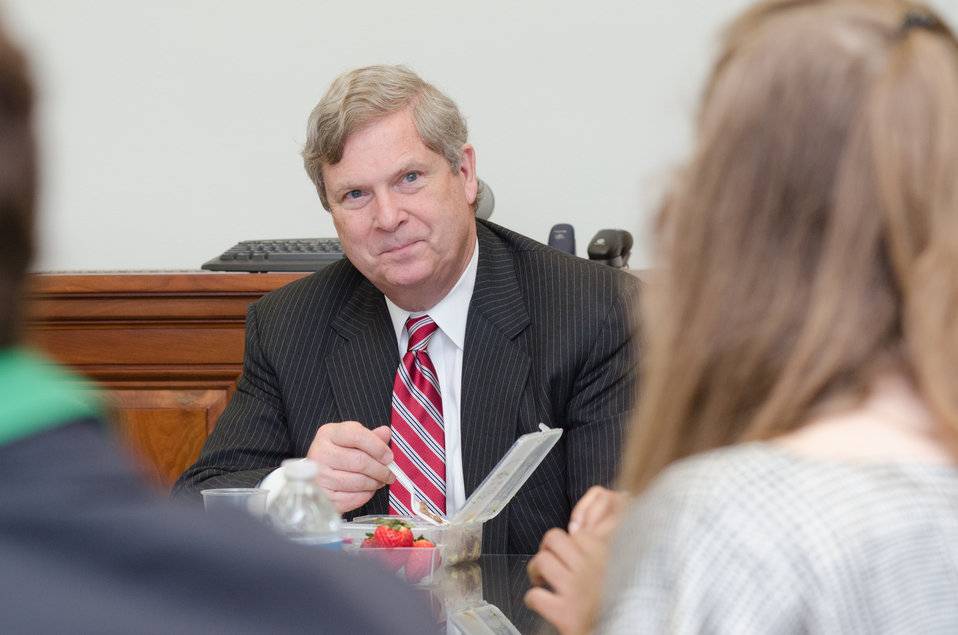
U.S. Department of Agriculture (USDA) Secretary Tom Vilsack, left, share a humerous moment with Rural Development (RD), Rural Utilities Service (RUS), Special Assistant Sara Buettner-Connelly, right, during a Brown Bag Lunch that Secretary Vilsack periodically has with employees, in his conference room, where they discuss their role in the department; on Tuesday, April 9, 2013, in Washington, D.C.